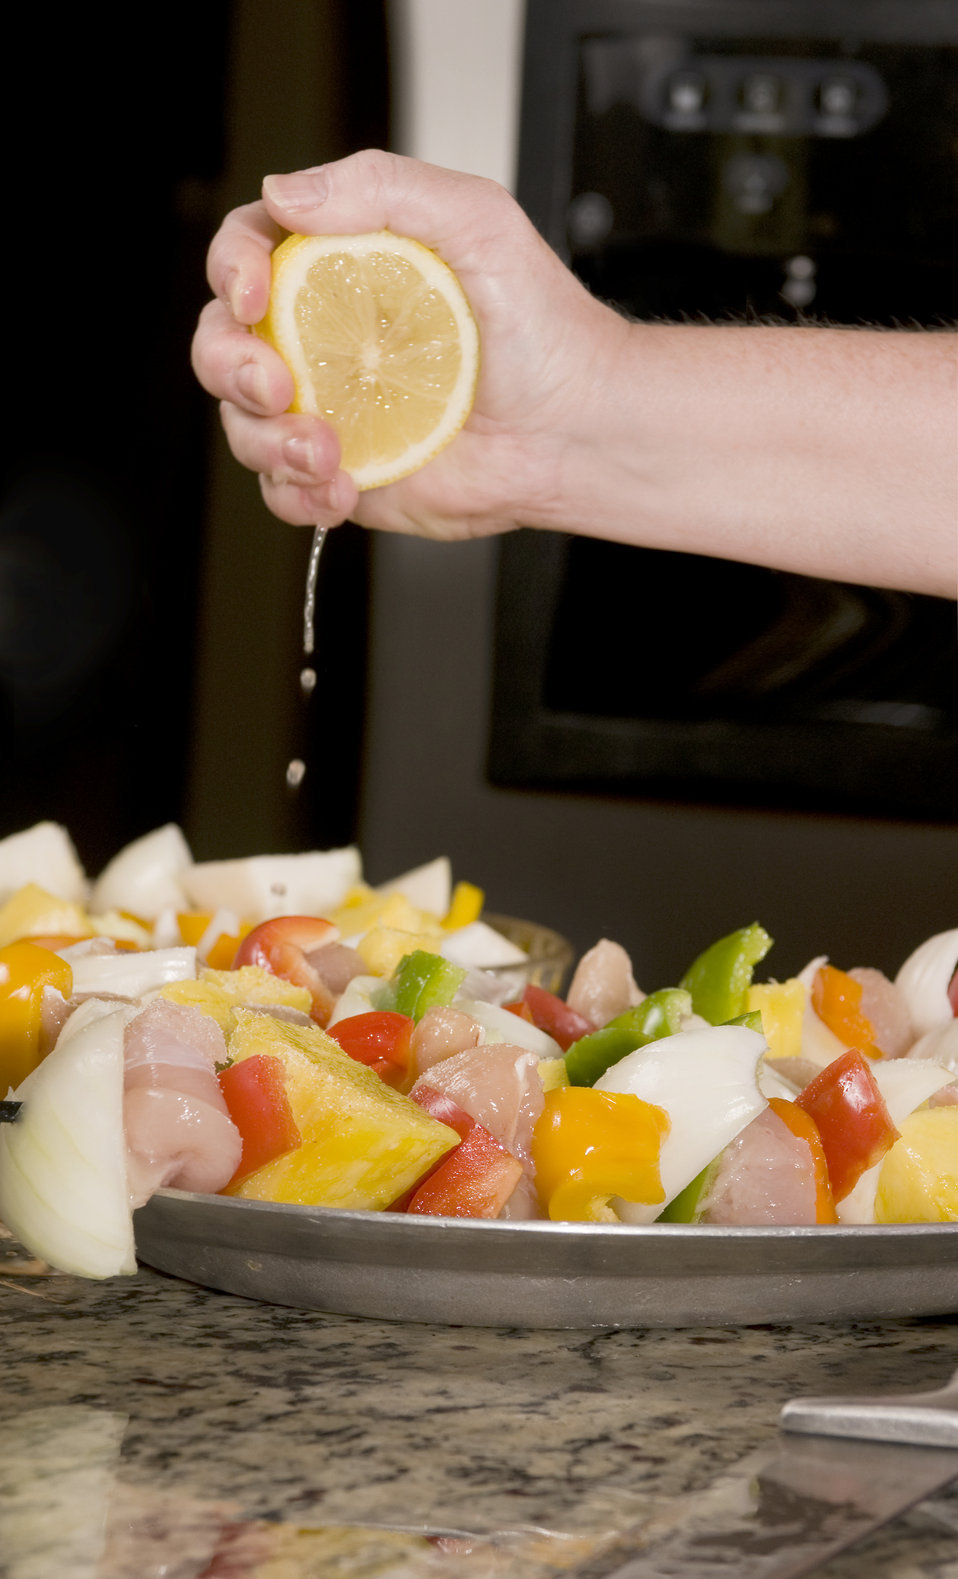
At this point in the food preparation process, this cook had assembled four kabobs consisting of various-colored bell peppers, pieces of sweet onion, chunks of deboned chicken breast meat, and pieces of fresh cut pineapple. We can see the cook adding some juice of a fresh-cut lemon, squeezing the fruit over the skewers prior to thoroughly cooking this dish.